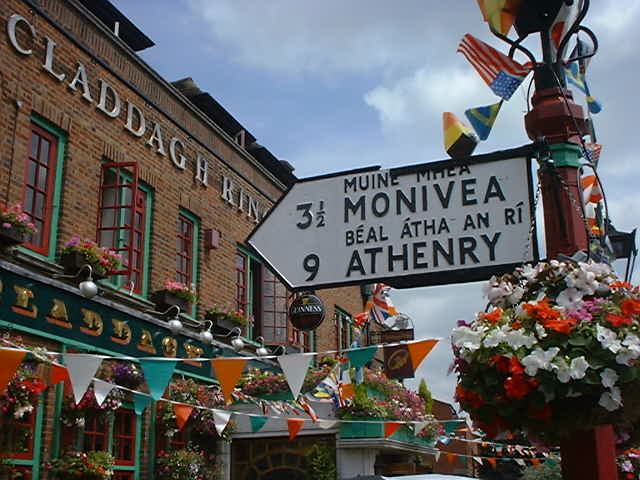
025521 claddagh ring